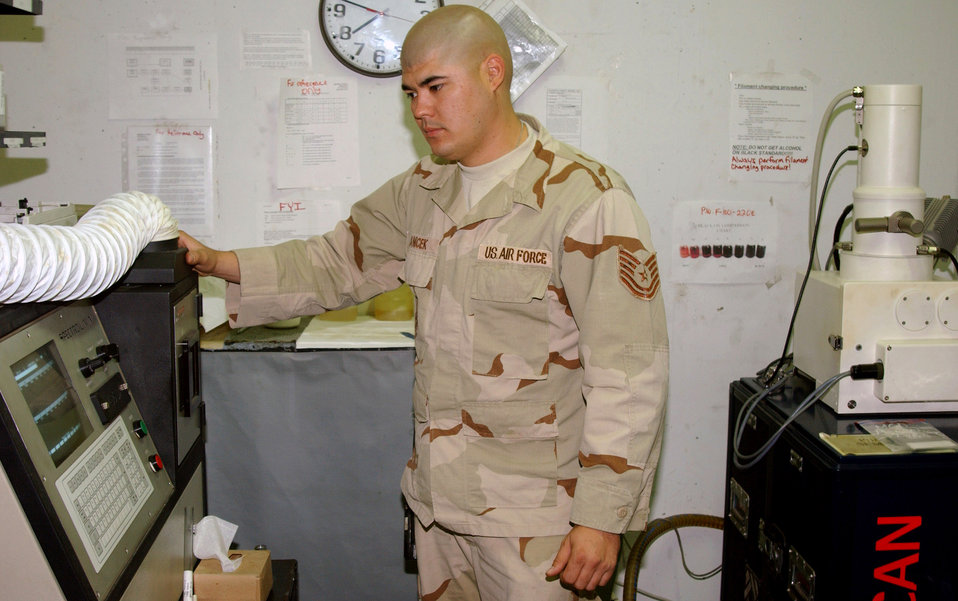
Maintainers seek hidden flaws, help save lives

Tech. Sgt. William Lanicek analyzes oil samples for metal particles July 23 in the non-destructive inspection shop at Balad Air Base, Iraq. Sergeant Lanicek is an NDI assistant shop chief with the 332nd Expeditionary Maintenance Squadron and he is deployed from Naval Air Station Joint Reserve Base, Fort Worth, Texas.